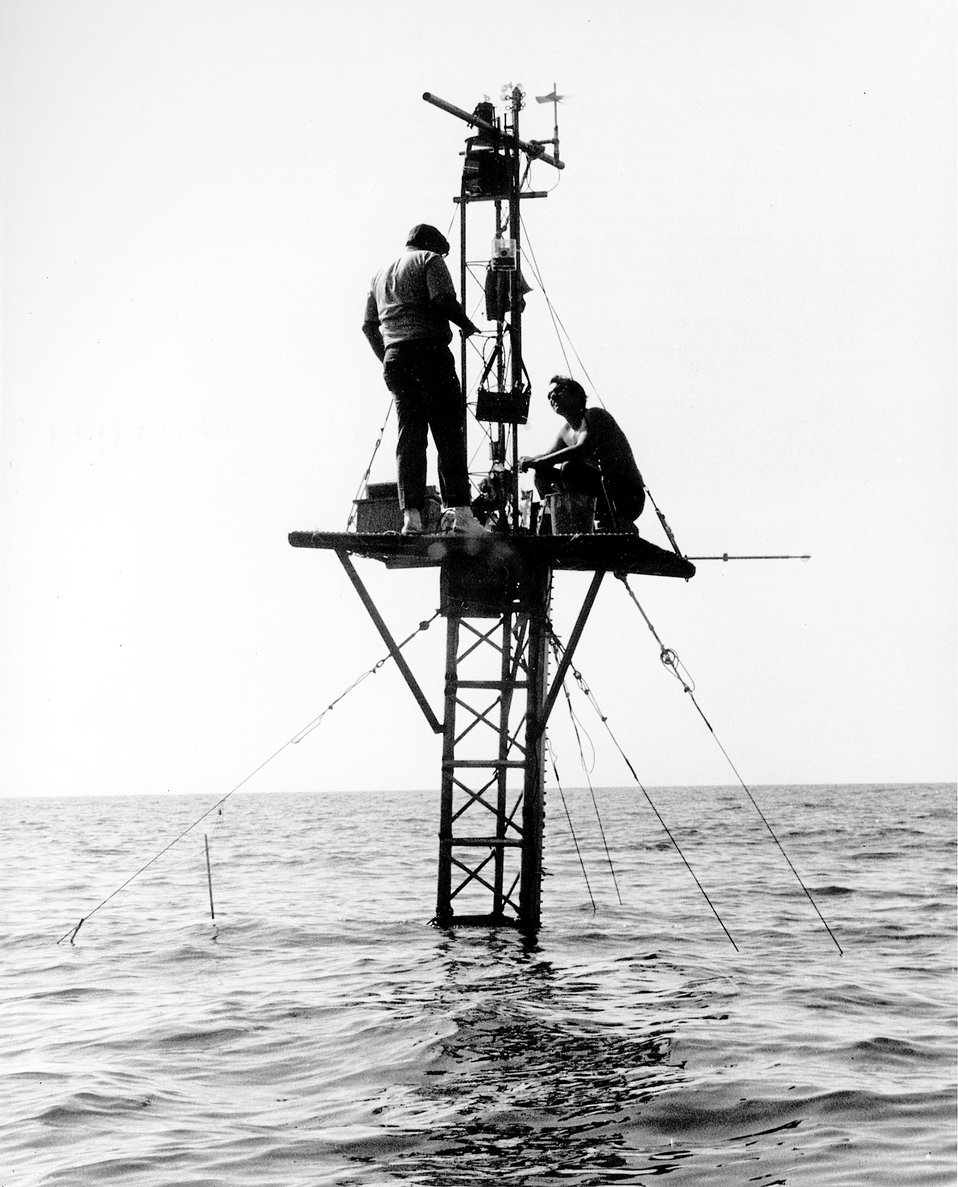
This instrument tower erected 2000 feet off-shore in Lake Michigan by the US Army Corps of Engineers is aiding the AEC's Argonne meteorologists in their study of the natural cooling process of the lake.